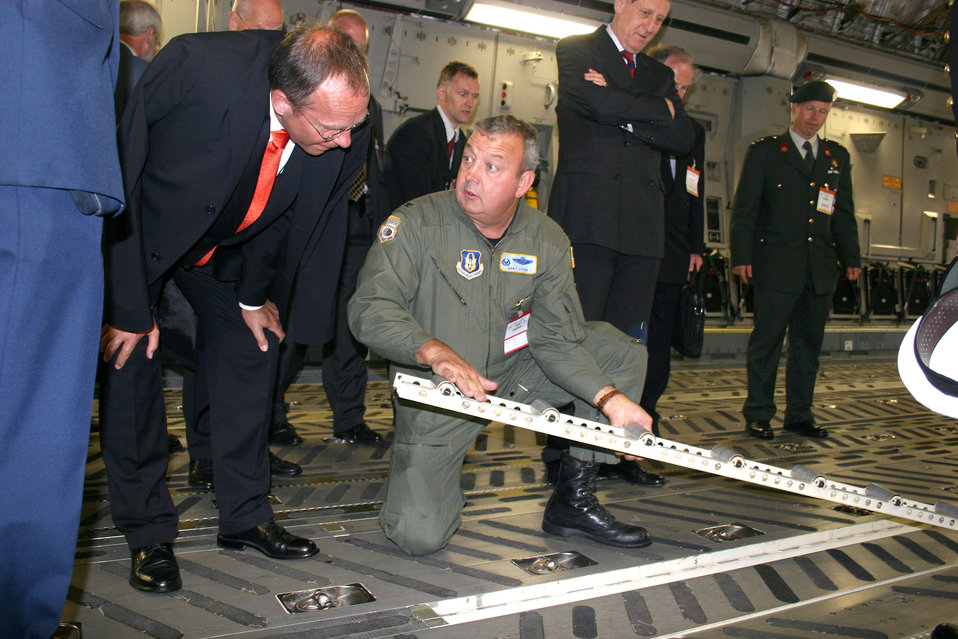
Berlin Air Show a hit

Col. Gary Cook discusses the cargo load capabilities of the C-17 Globemaster III with the Dutch Minister of Defense, Henk Kamp, during the Berlin Air Show on May 18, 2006 at the Berlin-Schoenefeld Airport. Colonel Cook is the 315th Airlift Wing commander from Charleston Air Force Base, S.C. From May 19 to 21, 120,000 people visited the air show, which promoted the goals of enhancing interoperability among U.S. allies as well as the commitment to the preservation of Europe's security.